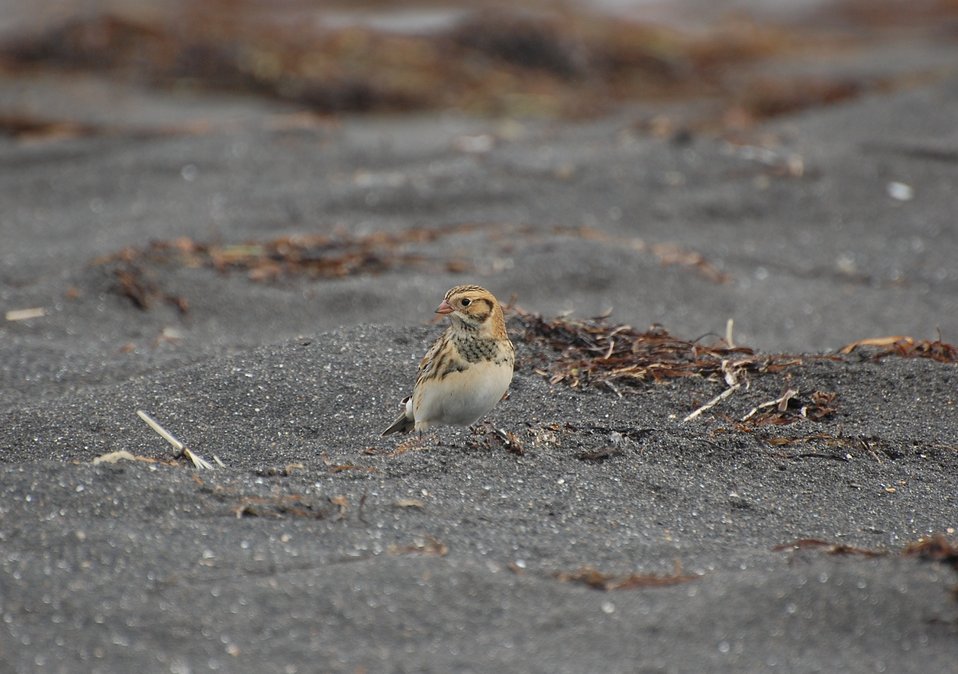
Juvenile Lapland Longspur

On the beach at Cape Glazenap, Izembek National Wildlife Refuge